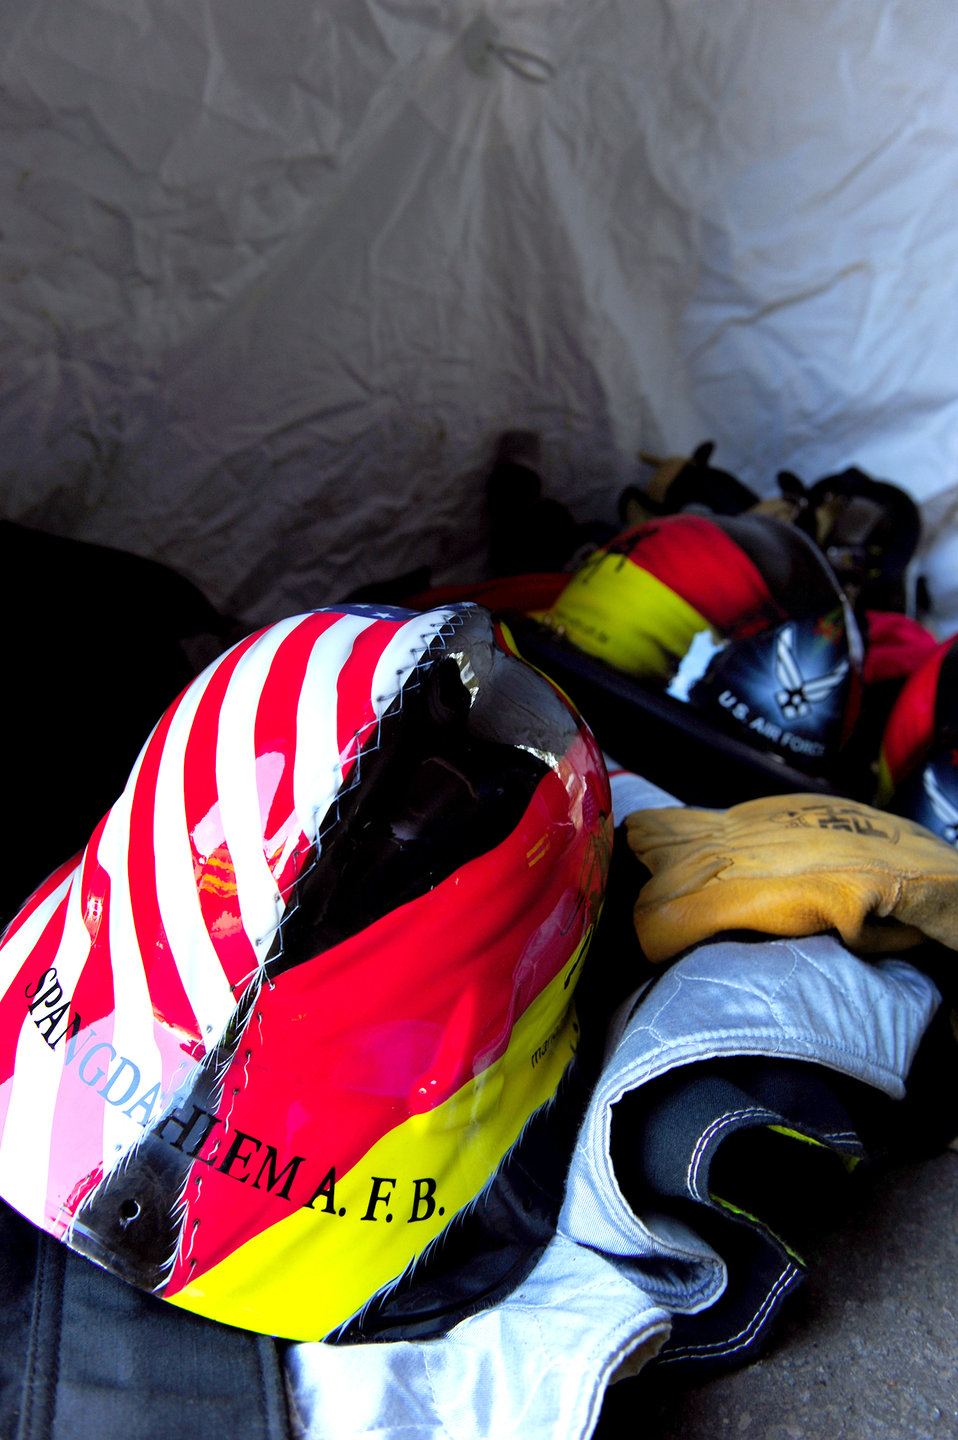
2010 USAFE Combat Firefighter Challenge1

U.S. Air Forces in Europe firefighter helmets lay in a tent during a Firefighter Combat Challenge Oct. 9, 2010 at the 435th Construction and Training Squadron contingency training site at Ramstein Air Base, Germany. The competition consisted of a timed, five-part obstacle course.